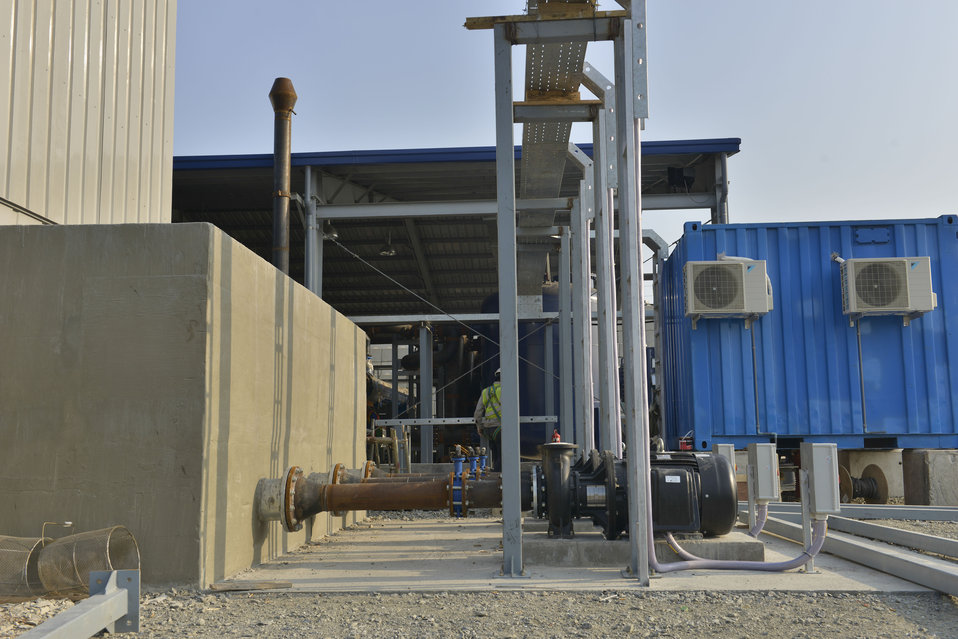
The liquid and vapor treatment plant/system constructucted north of the containment structure.

March 24, 2014.